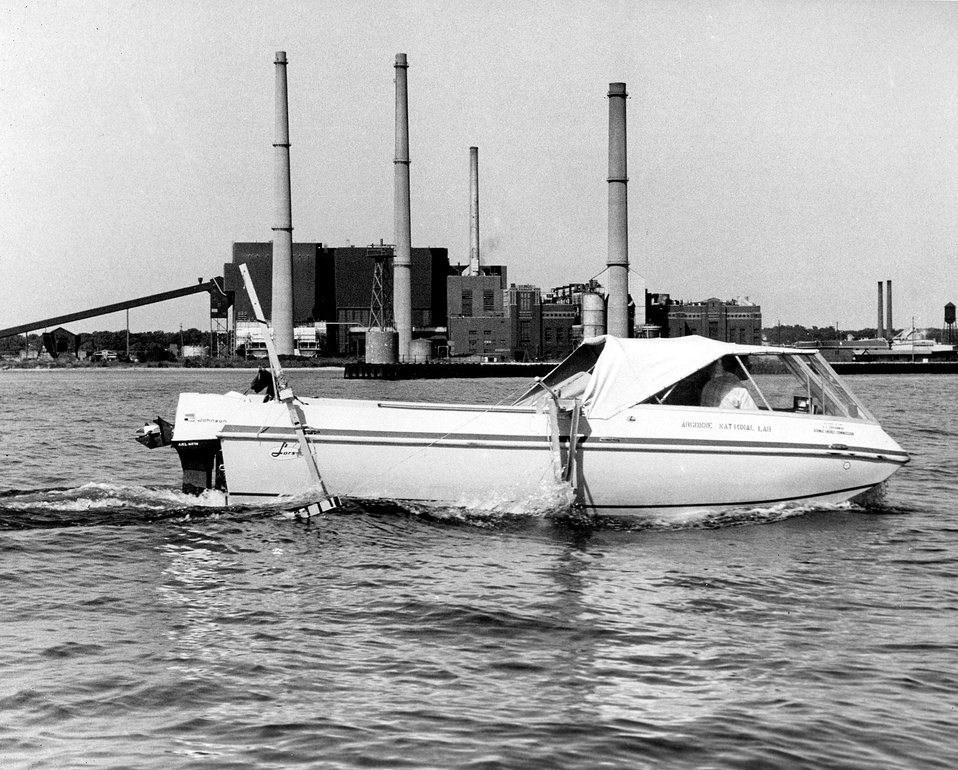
The The AEC's Argonne Lab-U of Michigan-U of Wisconsin long-term study of the Lake Michigan environment includes studies of old sources of heated water as well as new sources
c.1972